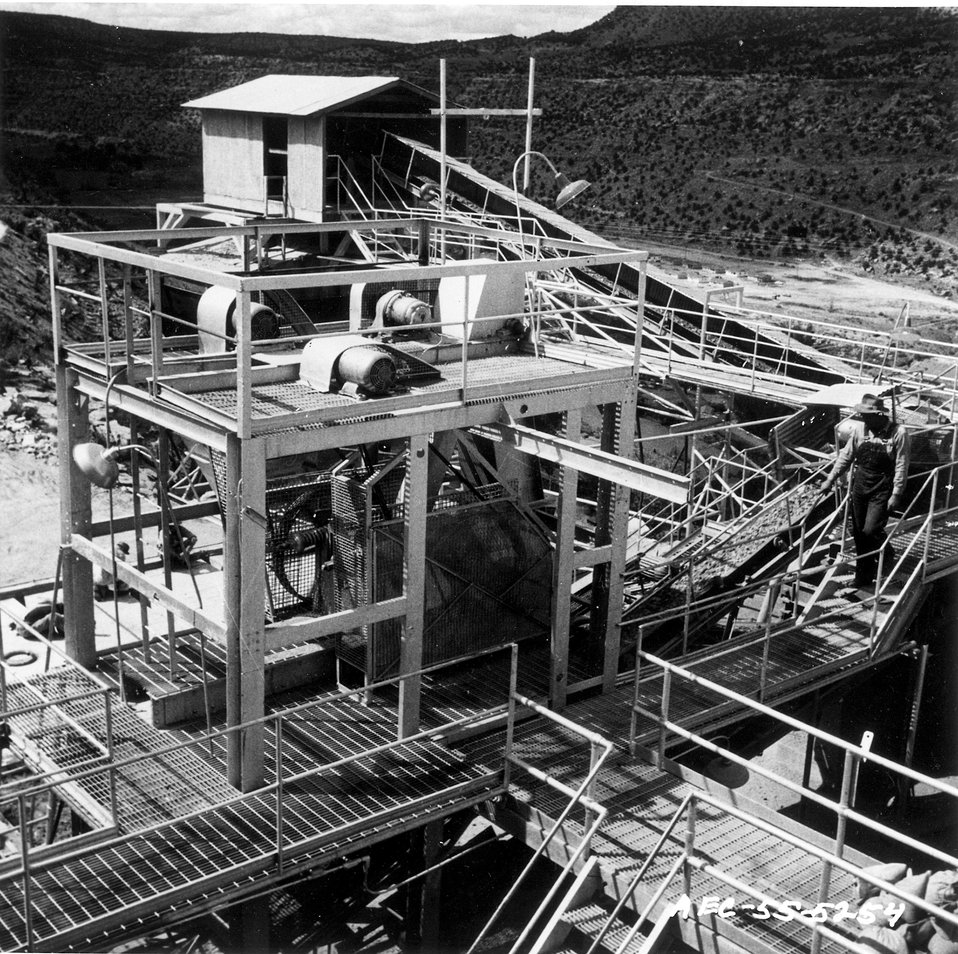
Load of uranium brought by truckers to Uravan, Colorado processing mill. c. 1955